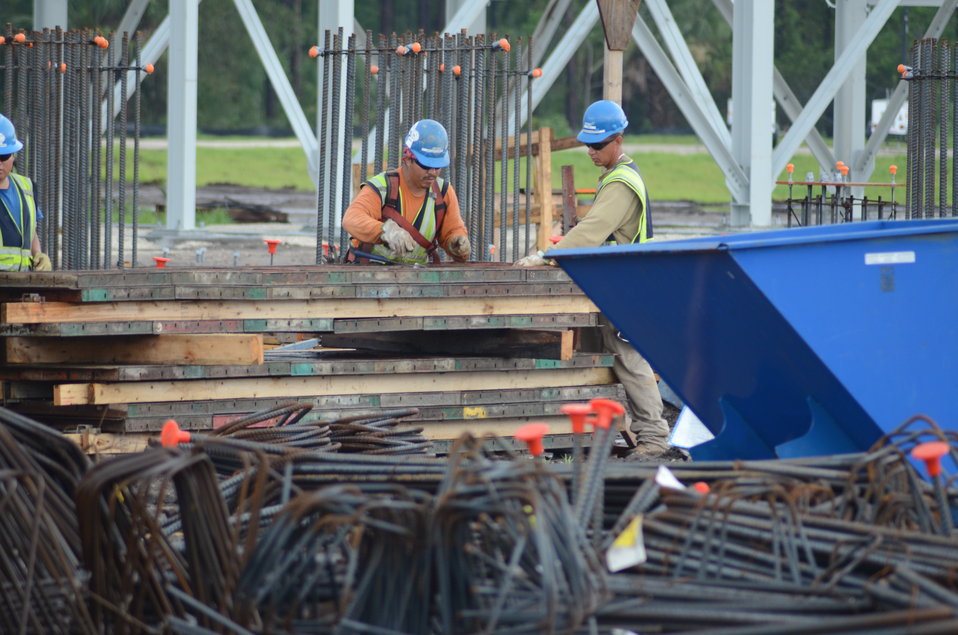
Construction personnel at work building the waste-to-energy INEOS bioprocessing facility in Florida, on Thursday, Aug. 11, 2011. The INEOS New Planed BioEnergy facility in Vero Beach, Florida, was granted a conditional Agriculture loan guarantee earlier this year to help build and operate a biorefinery capable of producing 8 million gallons per year of cellulosic ethanol and 6 megawatts of electricity.